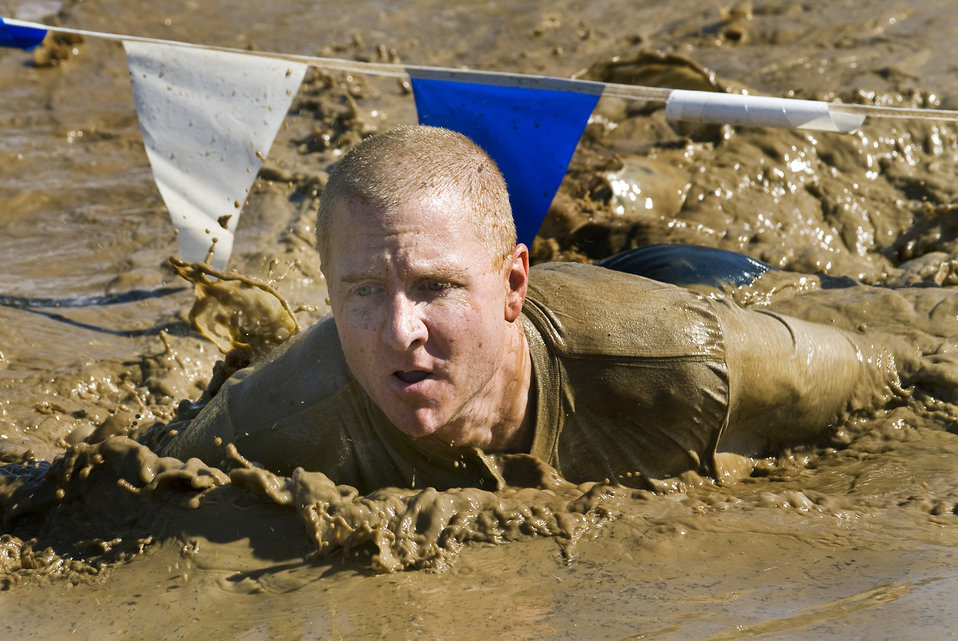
Mud bath, anyone?

Master Sgt. Craig Brown crawls through the famed mud pit during the 10th Annual Mather Mud Run in Rancho Cordova, Calif., Sept. 5, 2009, during Air Force Week Sacramento. The Mud Run features a 5-mile or 2-mile obstacle course boot camp challenge with low walls, tunnel crawls, a tire run, hay bale jumps and a low-crawl mud pit. Sergeant Brown is a member of the 615th Contingency Response Wing at Travis Air Force Base, Calif.